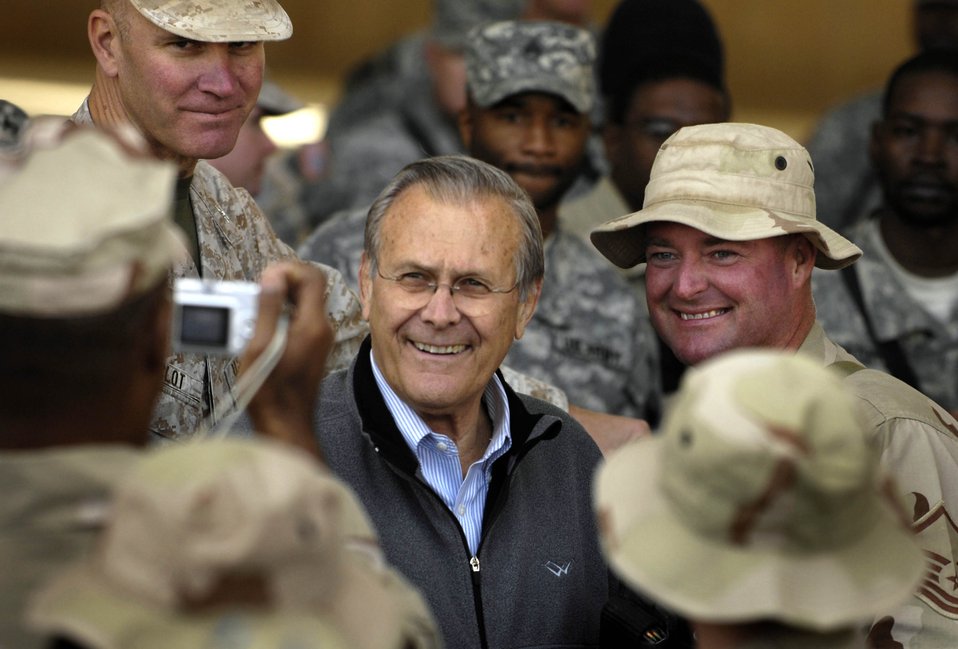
Surprise visit

Secretary of Defense Donald H. Rumsfeld poses for a photo with servicemembers at a town hall meeting Dec. 9 on Al Asad Air Base, Iraq. Secretary Rumsfeld made a surprise visit to Iraq to thank the military members and their families for their sacrifices and dedication to the country.